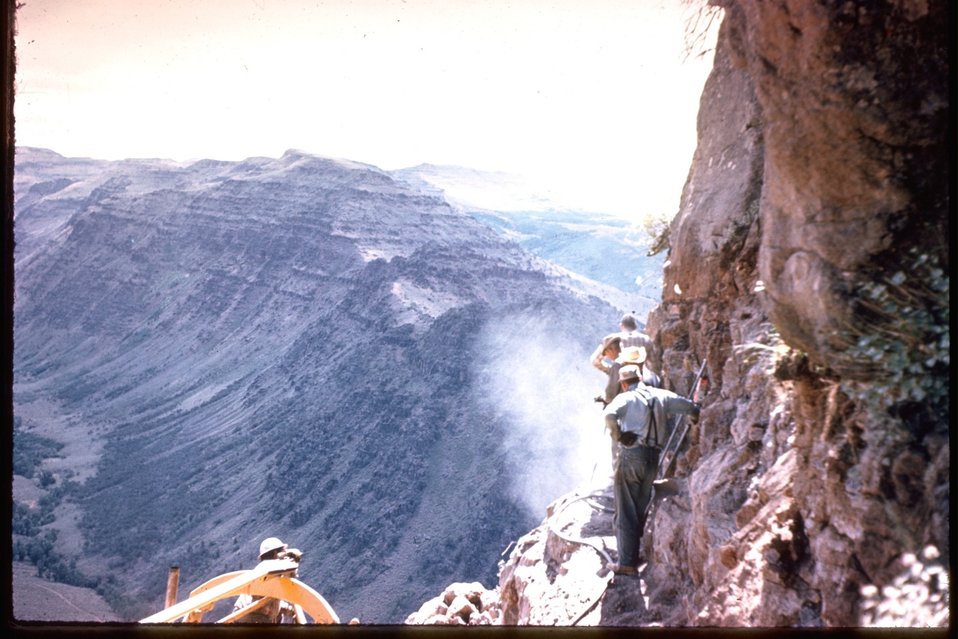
Constructing the Rooster Comb section of the Steens Mountain Back Country Byway. (ca. early 1960's)